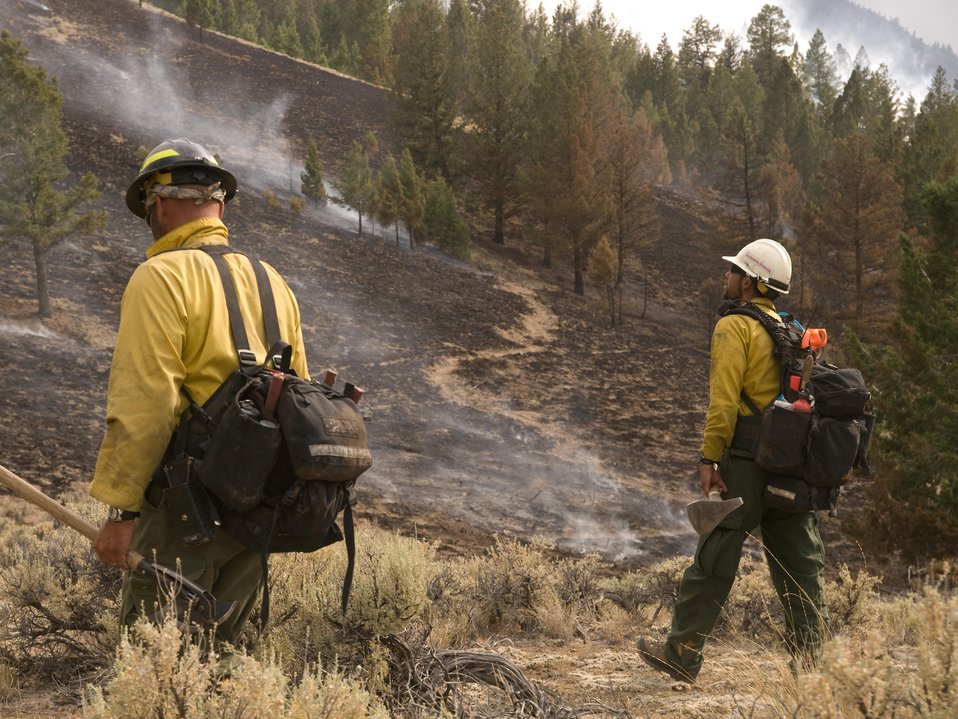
Firefighters work on the Lodgepole Fire. The Lodgepole Fire in the Salmon-Challis National Forest near Challis, ID began on Jul. 20, 2013 by lightning has consumed approximately 13,700 acres and is approximately 15% contained.